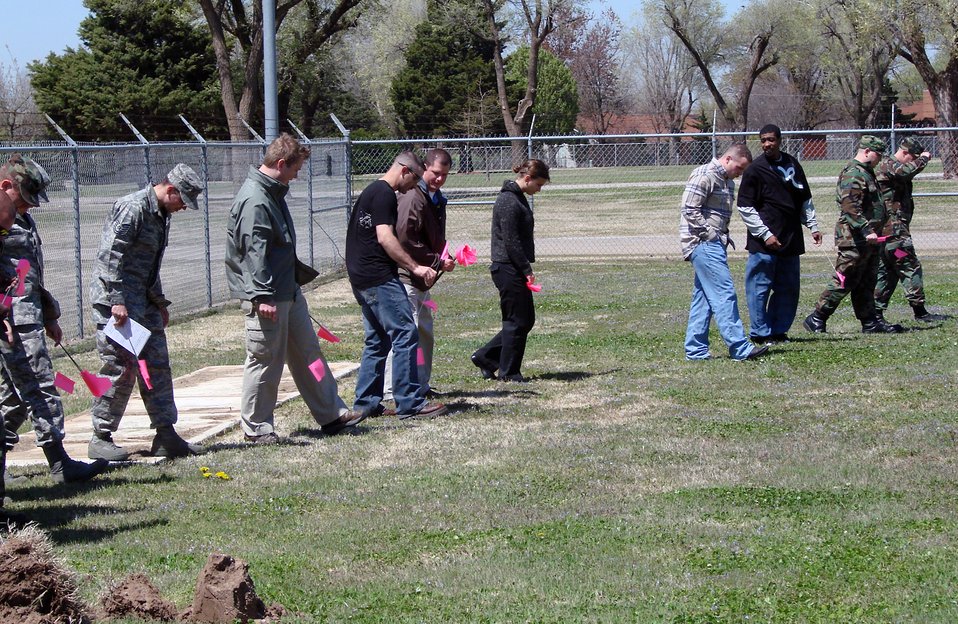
Did you say CSI or AFOSI?

People from bioenvironmental, the Air Force Office of Special Investigations, security forces and the fire department at Vance Air Force Base, Okla., walk a grid and mark evidence during an exercise April 15 on how to preserve and process a chemical or weapon of mass destruction scene that may be a result of criminal activity. The first responders received the training on how to process a hazardous materials incident from an AFOSI crime scene investigator.